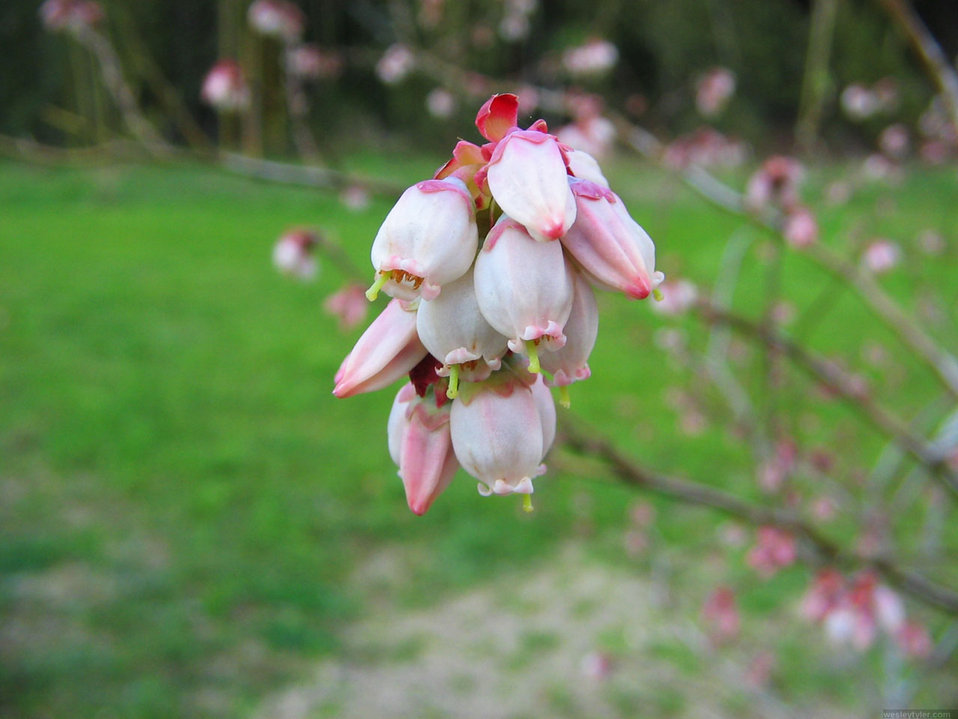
Blue berry buds

Blue berry flowers.